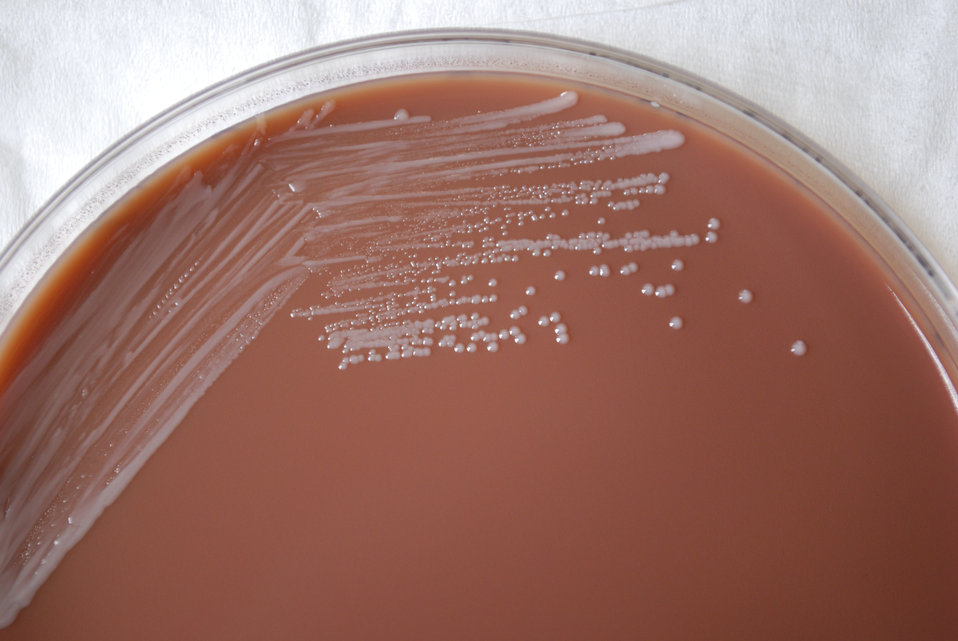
A closer view of PHIL 12282, this photograph depicts the colonial morphology displayed by Gram-negative Brucella abortus bacteria, which was grown on a medium of chocolate agar, for a 72 hour time period, at a temperature of 37�C. This Petri dish and its contents were incubated in a CO2 incubator. B. abortus bacteria are known to cause the disease brucellosis.